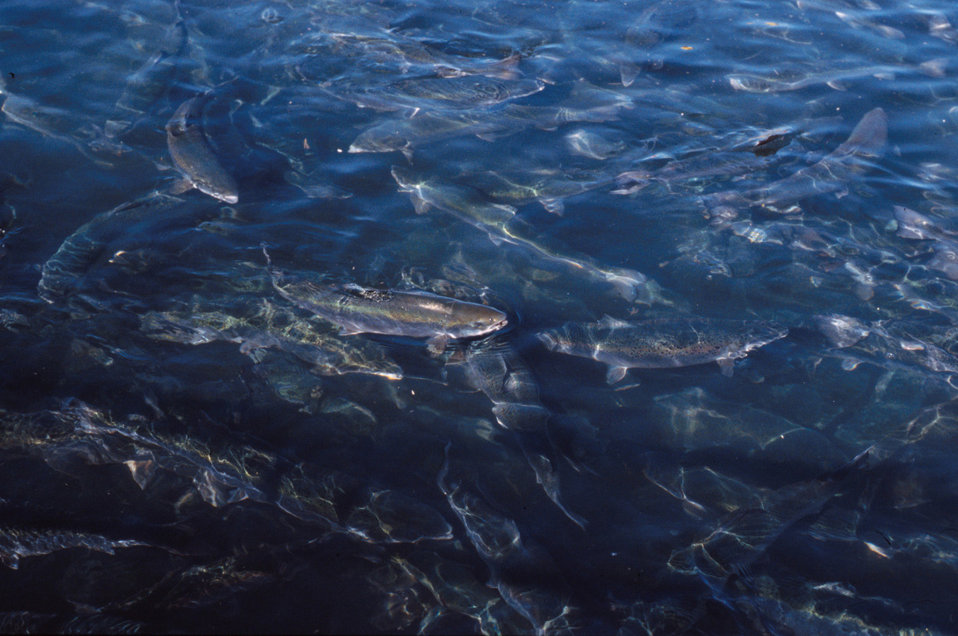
Salmon swimming within a netted pen at a fish farm in Maine.